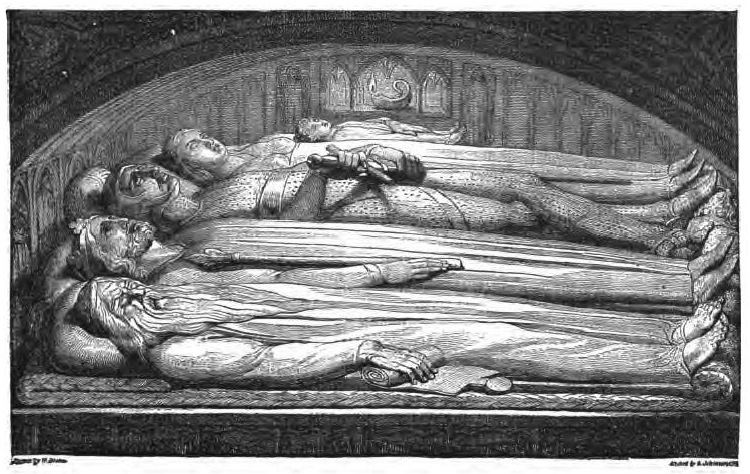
'Grave' by William Blake. Woodcut.